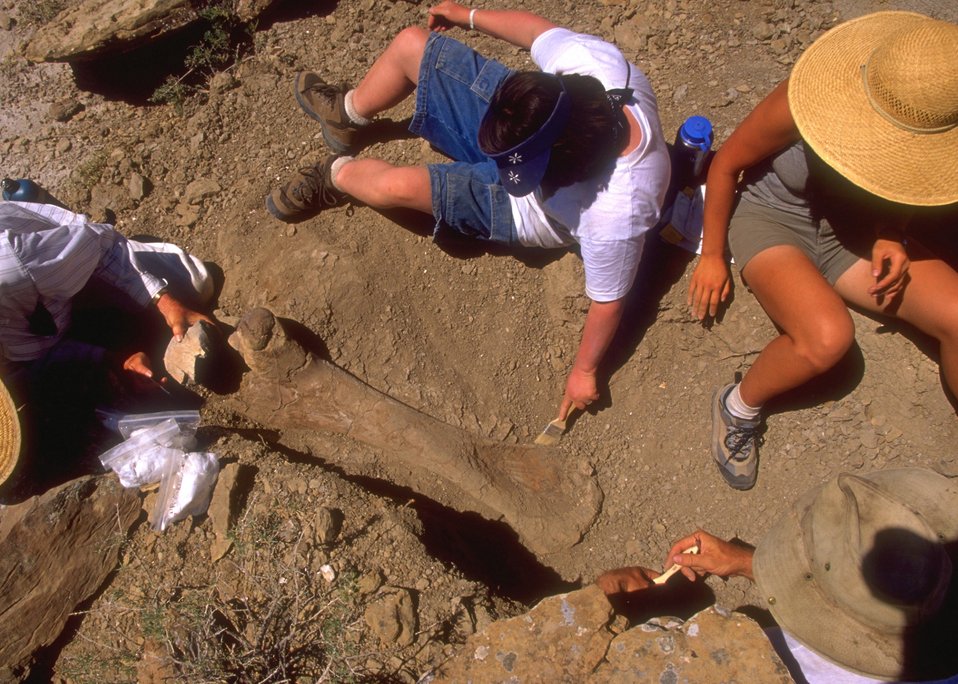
Paleontologist working a dig for dinosaur bones, Lance Creek Fossil Area, Newcastle Field Office.